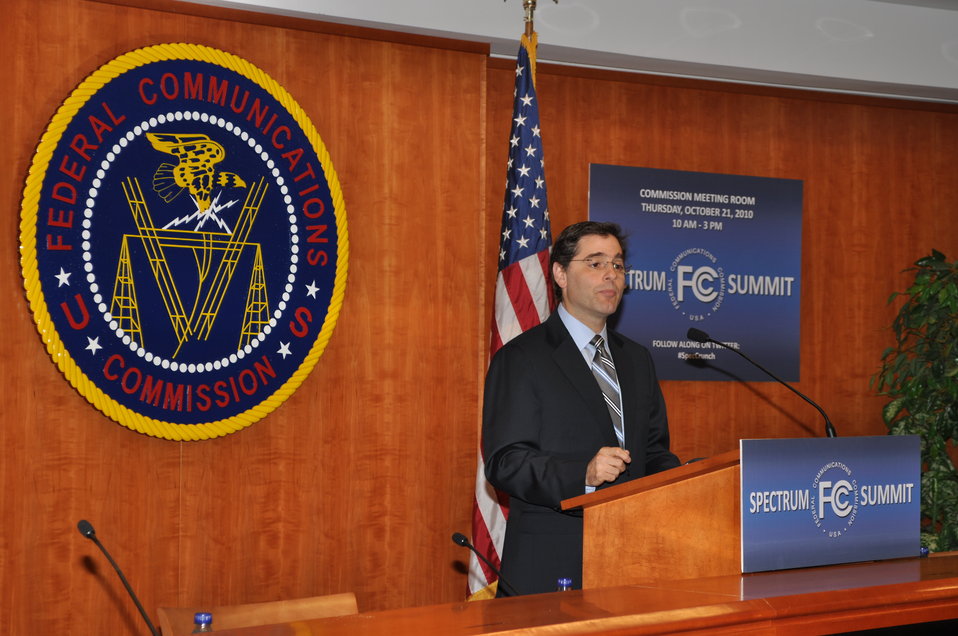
Spectrum Summit